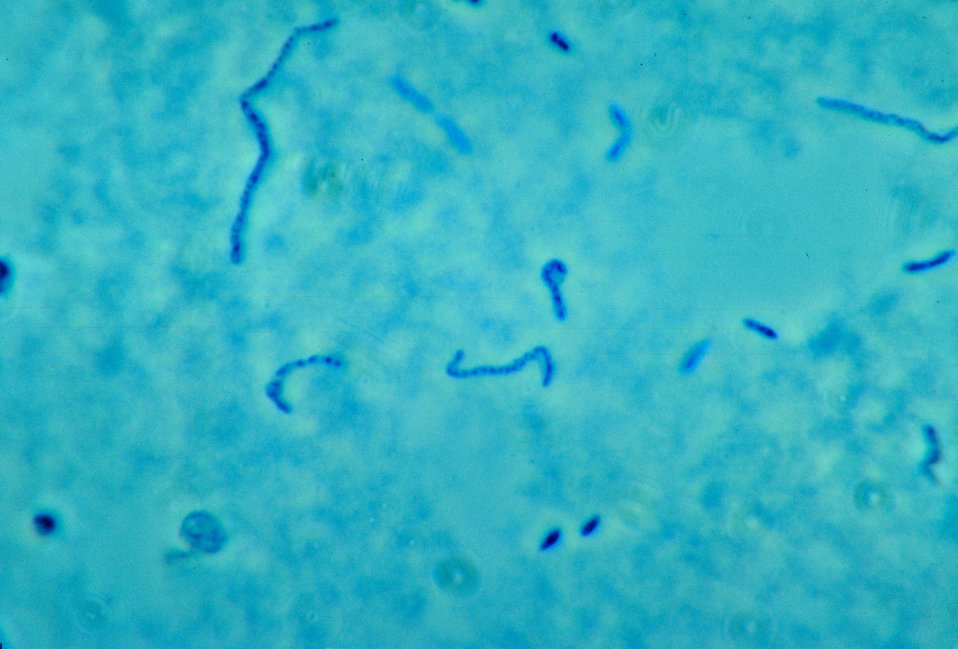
This is a phase-contrast photomicrographic image of Fusobacterium necrophorum.